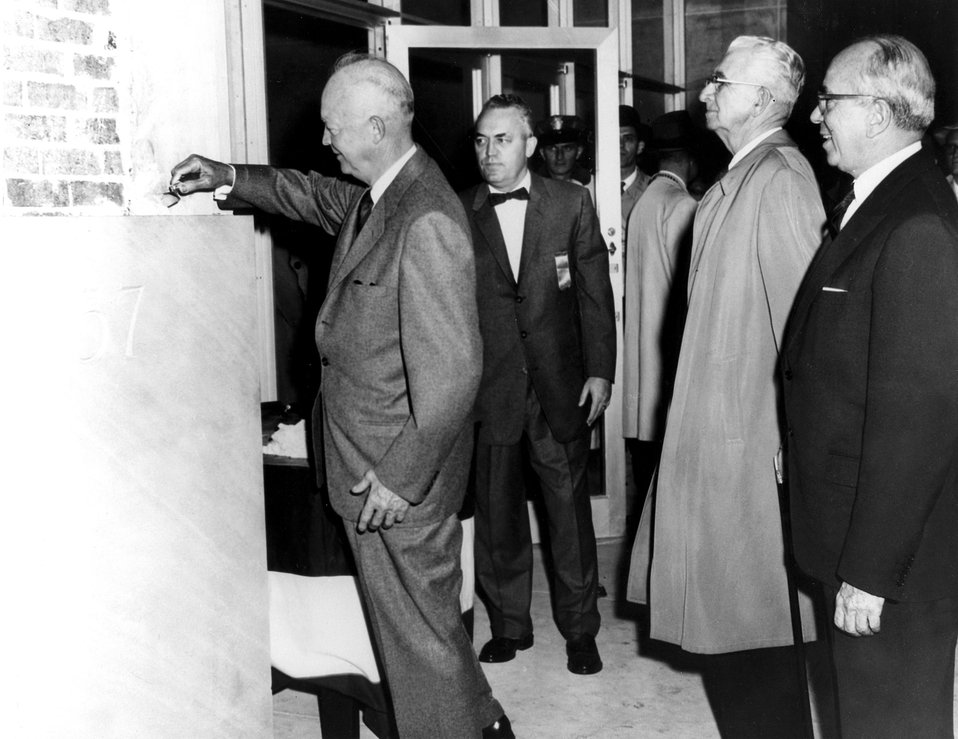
President Eisenhower laying the cornerstone at the dedication of the Germantown building.